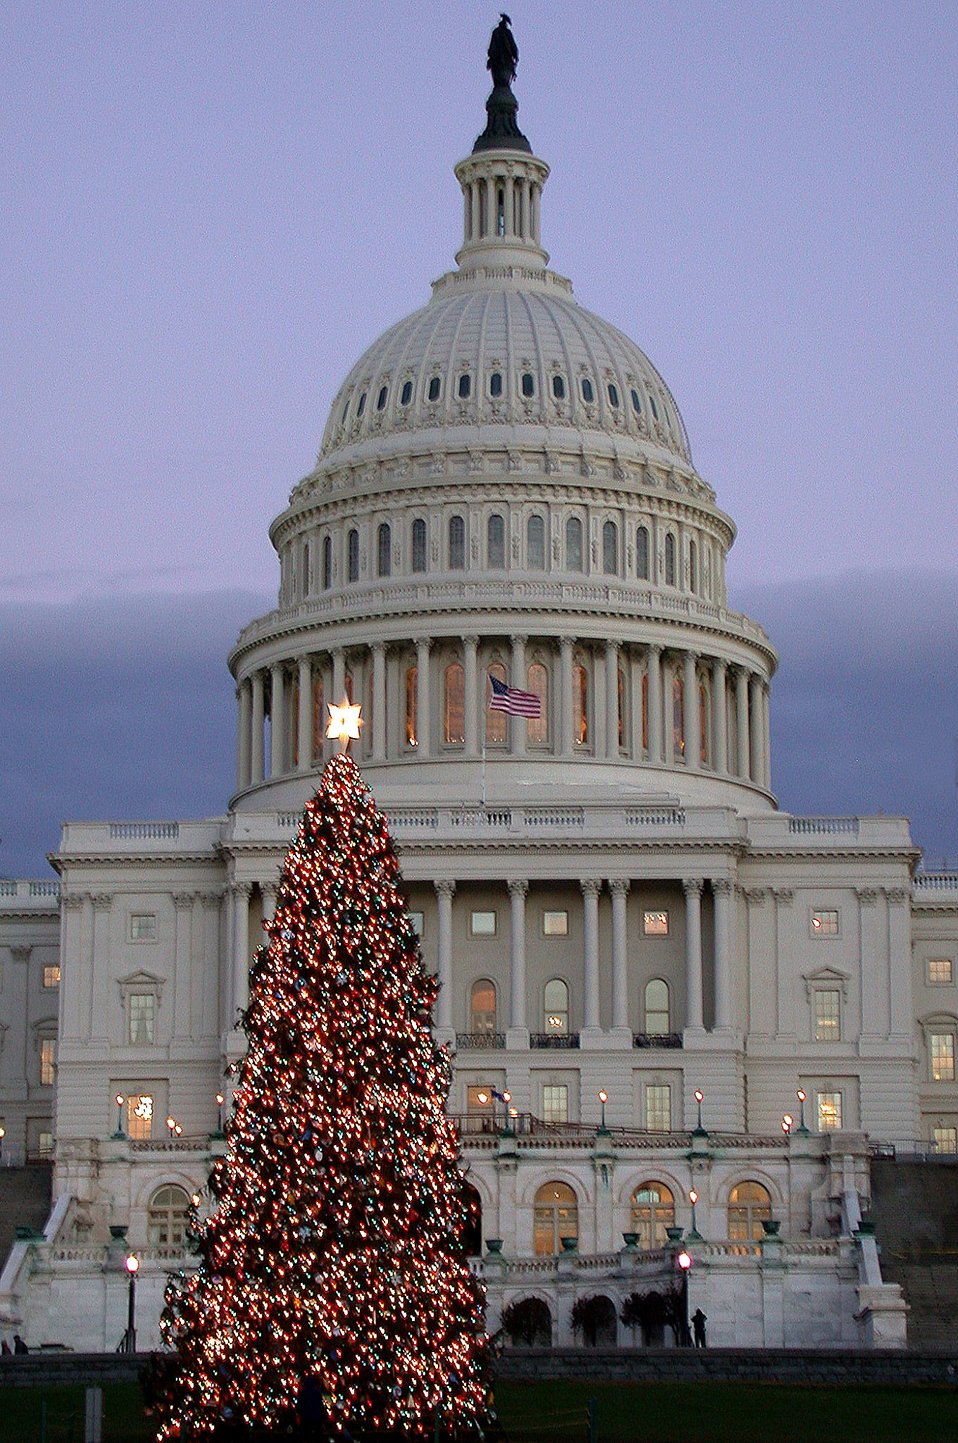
United States Capitol building.